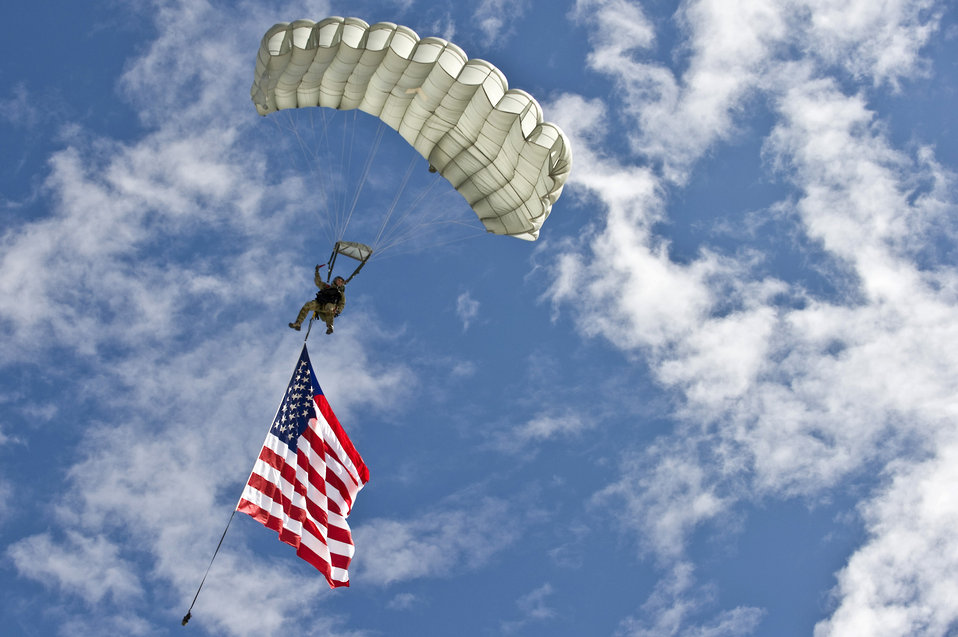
Just dropping in

A U.S. Air Force combat controller jumps with the American flag during the 2011 Aviation Nation Open House Nov. 12, at Nellis Air Force Base, Nev. Aviation Nation celebrates 70 years of airpower in Las Vegas and the Air Force's accomplishments in air, space and cyberspace.